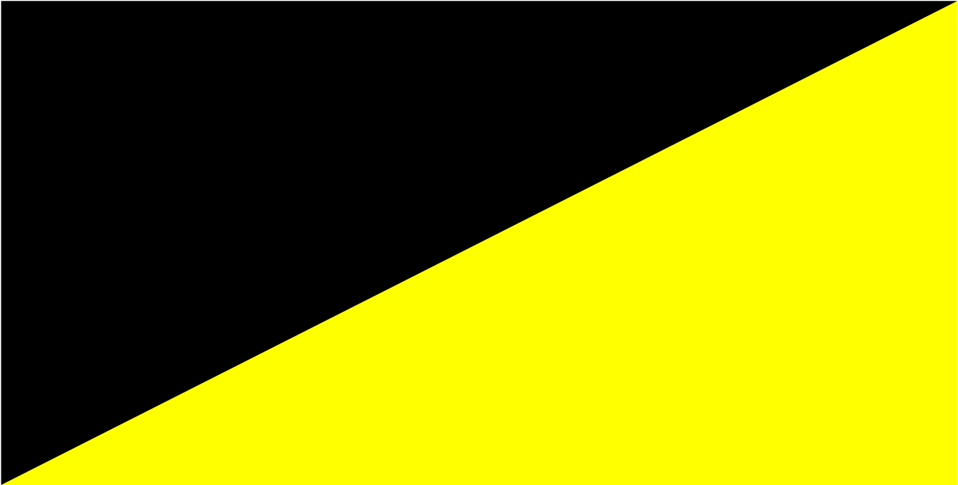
Unit colour patch of 10th Light Horse Regiment